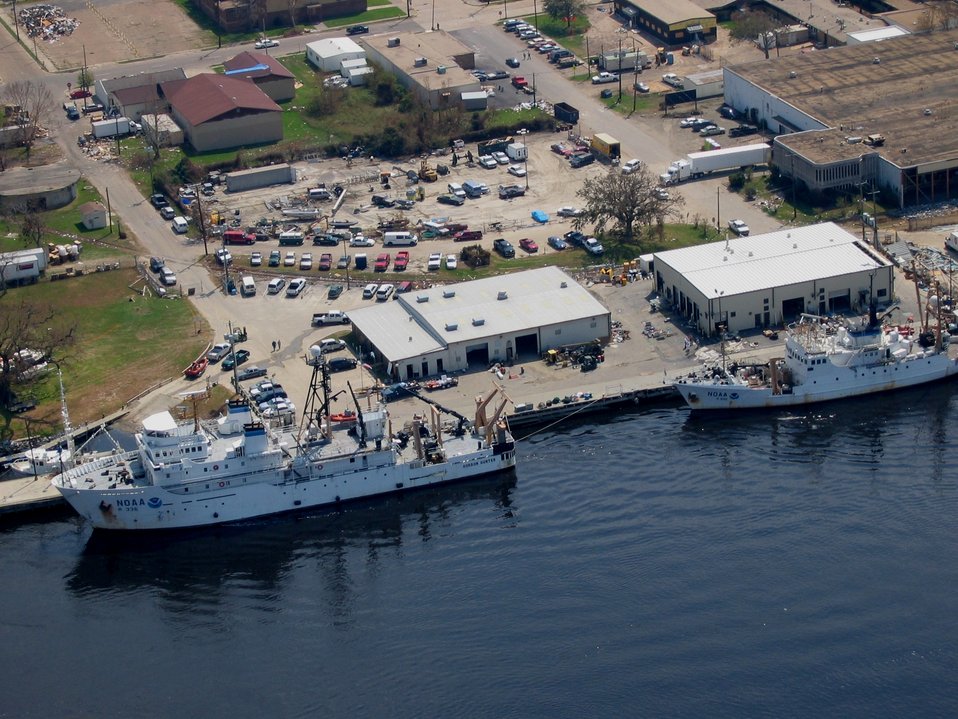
NOAA ships at the NOAA National Marine Fisheries Laboratory pier.